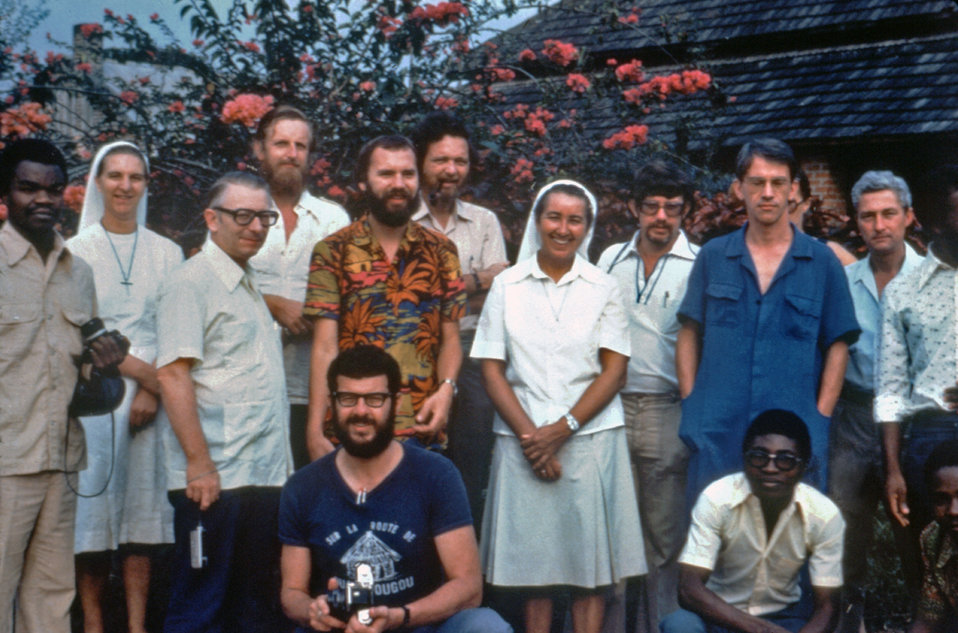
This photograph shows a team of healthcare professionals, which was established in order to control the 1976 Ebola outbreak in Yambuku, Zaire.